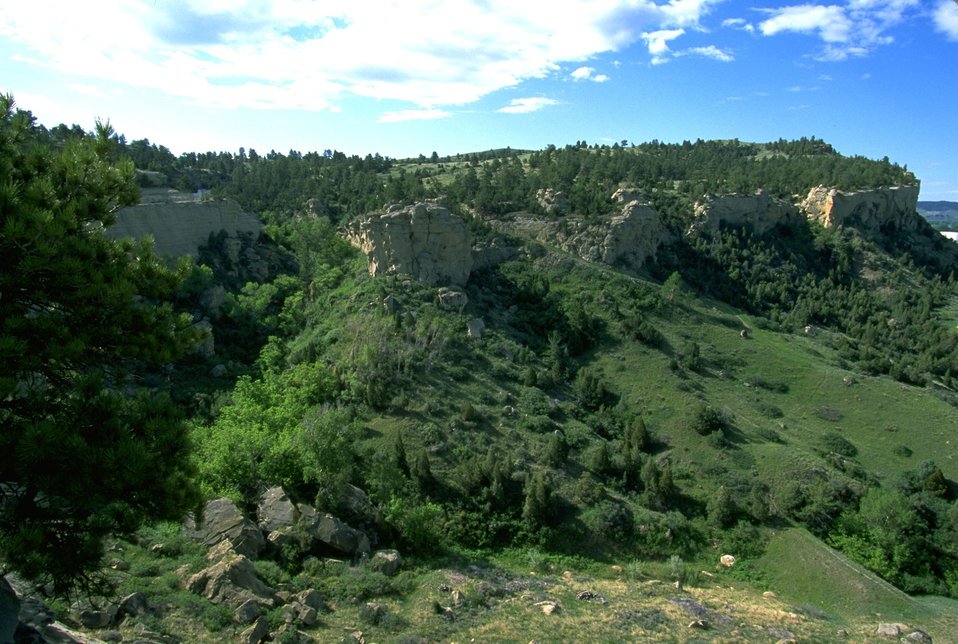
Rimrocks south of the city of Billings MT